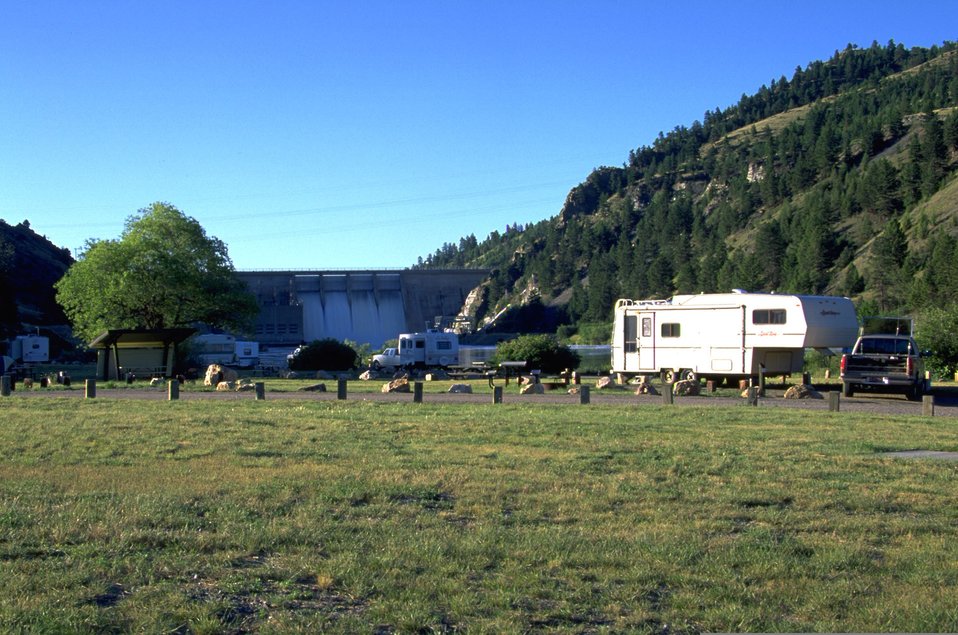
Camping trailer